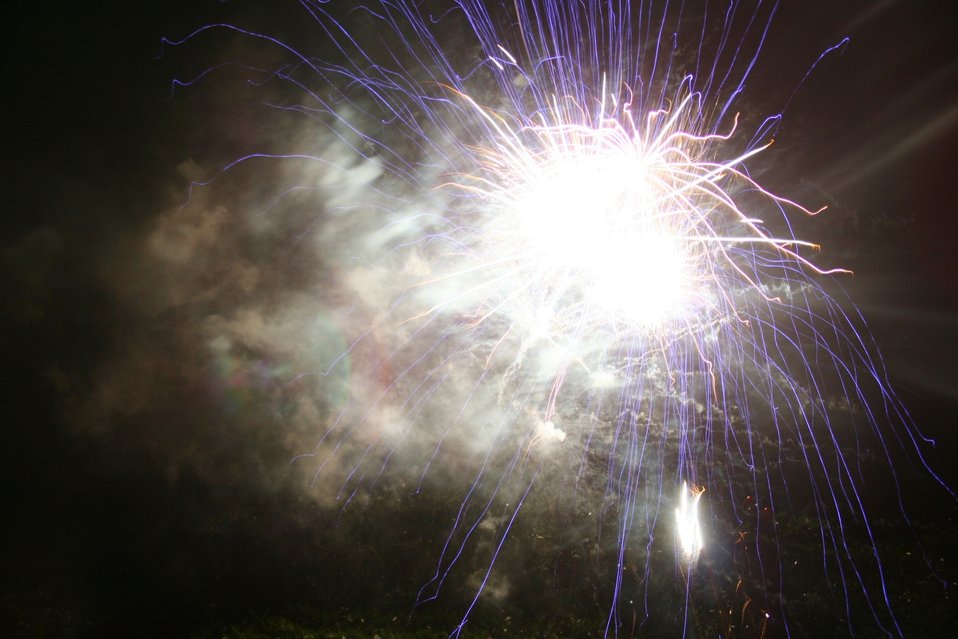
July 4th Celebration at U.S. Embassy in Tanzania

Fireworks light up the sky at the U.S. Embassy Dar Es Salaam in Tanzania community's U.S. Independence Day celebration that brought together over 200 local Tanzanians and their families including State, USAID, CDC, and Peace Corps on June 30, 2010, in Dar Es Salaam, Tanzania.